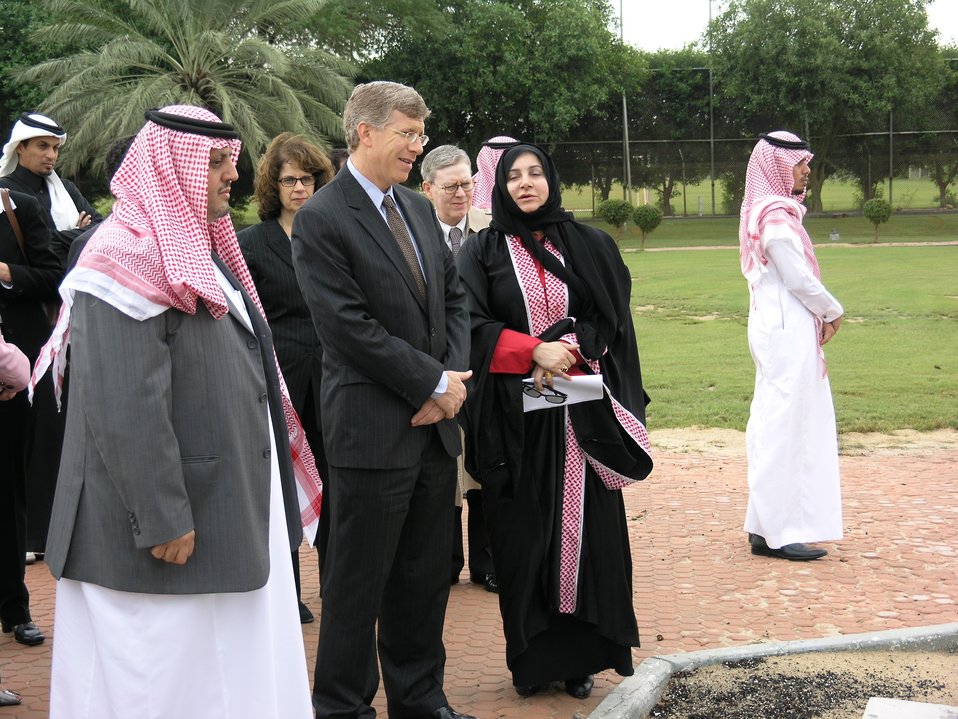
Deputy Secretary Poneman tours Saudi Aramco in Saudi Arabia.